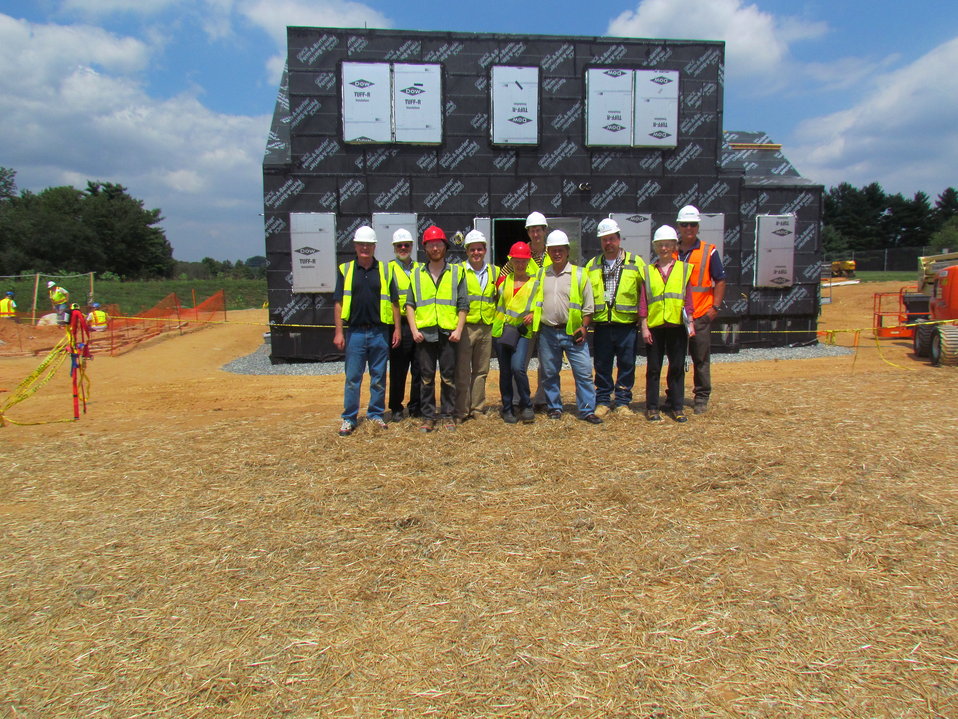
Net-Zero Energy Residential Test Facility - Picture of personnel from Therrien Waddell, Building Science Corporation, Jacobs Engineering, and NIST that conducted/witnessed air leakage test on facility.